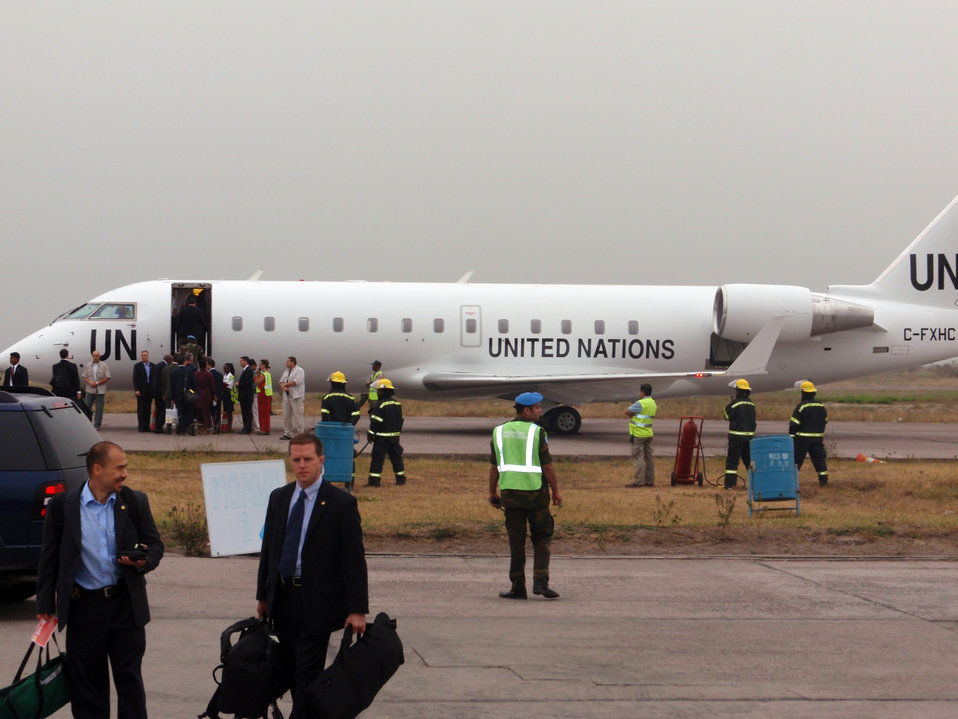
Behind the Scenes: Goma, Democratic Republic of Congo

The United Nations plane used by U.S. Secretary of State Hillary Rodham Clinton during her visit to Goma from Kinshasa, Democratic Republic of the Congo August 11, 2009.